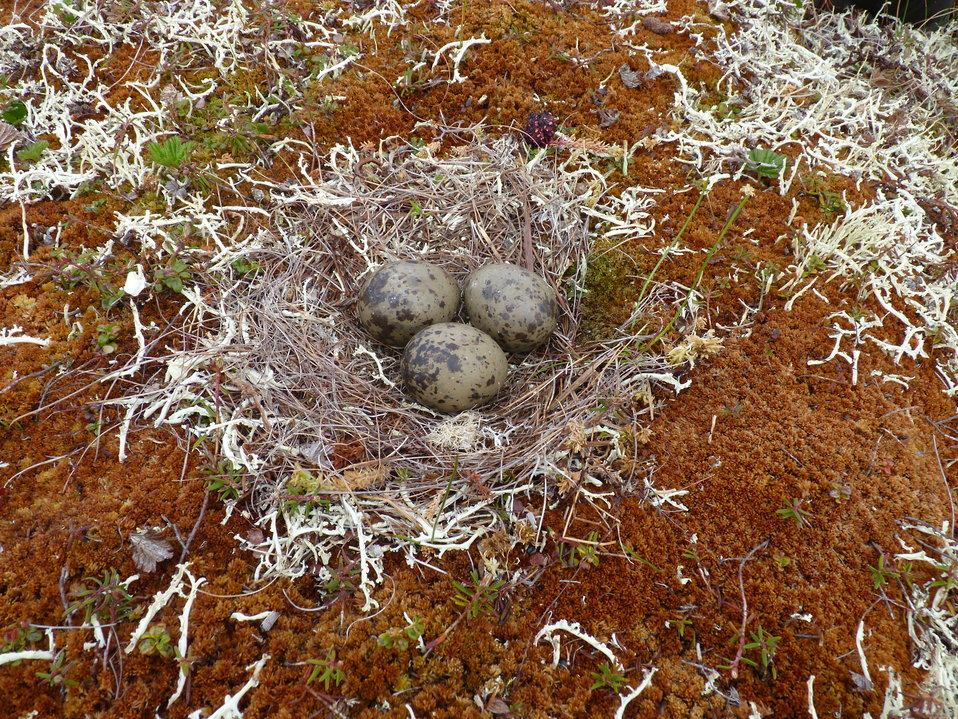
Mew gull nest

Andreafsky wilderness, Yukon Delta National Wildlife Refuge